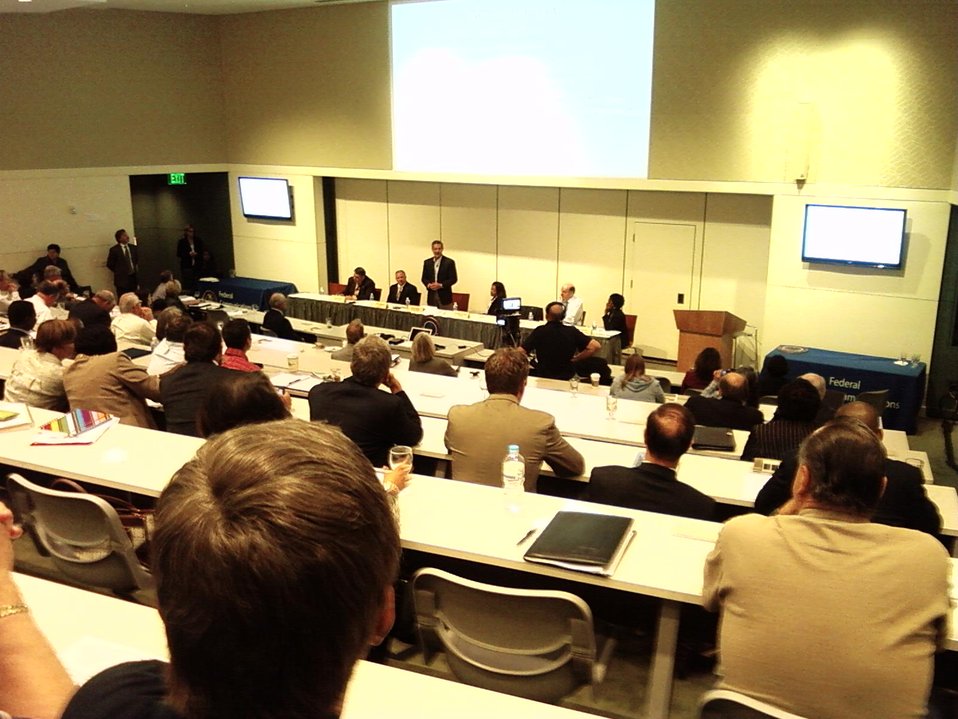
sc event 21

Broadband Field Hearing, in Charleston, South Carolina. 10-06-09